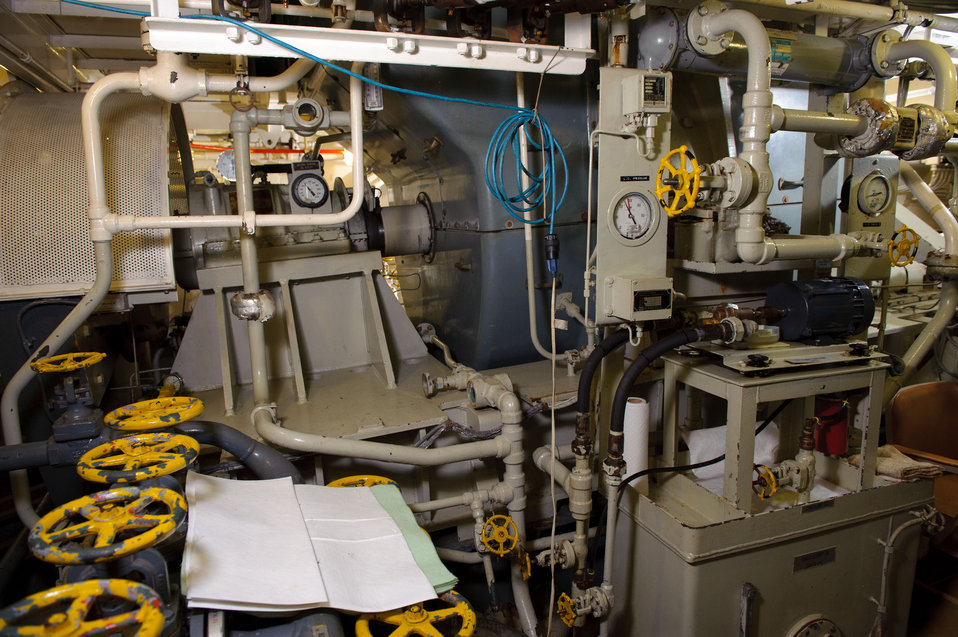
August 9, 2011 Inside the Bold's engine room